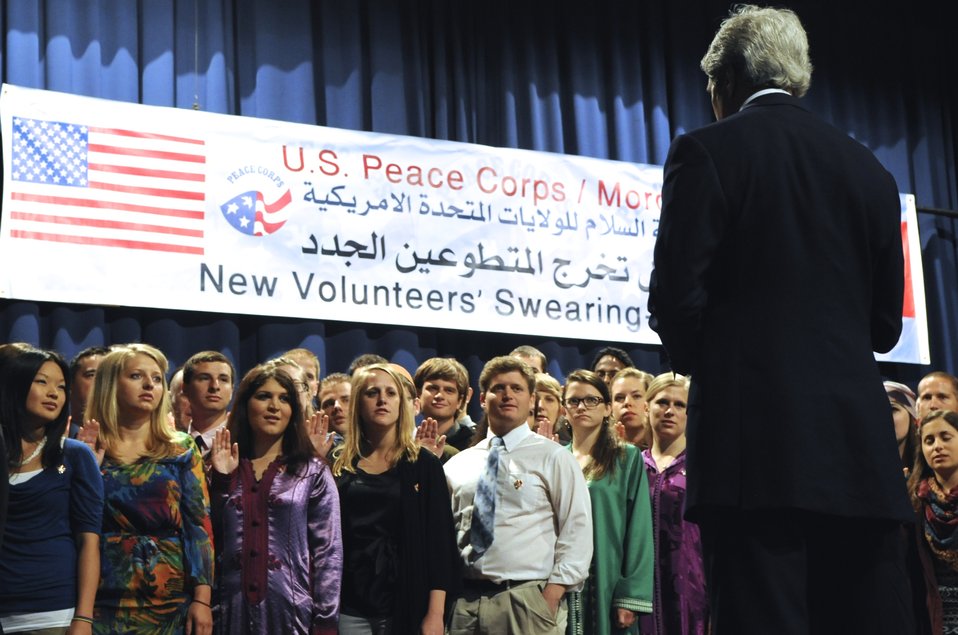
Secretary Kerry Swears-In Peace Corps Volunteers in Morocco

U.S. Secretary of State John Kerry leads a swearing-in ceremony for over 100 incoming Peace Corps volunteers in Rabat, Morocco, on April 4, 2014.